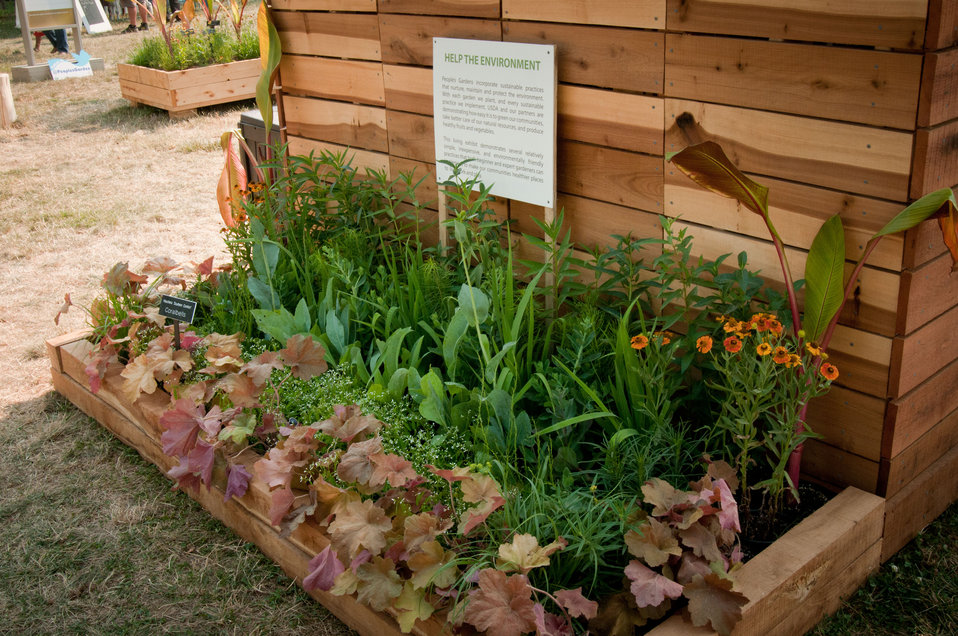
This living exhibit at the 2012 Smithsonian Folklife Festival, on the National Mall in Washington, D.C., on Thursday, June 28, 2012, demonstrates one of several relatively simple, inexpensive and environmentally friendly practices that both beginner and expert gardeners can implement to make our communities healthier places to live, work and play. One of the three themes this year is “Campus and Community.” It celebrates the 150 years of the USDA and the Land-Grant University System. The U.S. Department of Agriculture (USDA) and the Land-Grant system extend education across the country, contributing to American agriculture success and rural prosperity. “Campus and Community” has demonstrations, discussions, hands-on activities, and entertainment to that showcase the many ways that this partnership works to improve American agriculture and rural life.